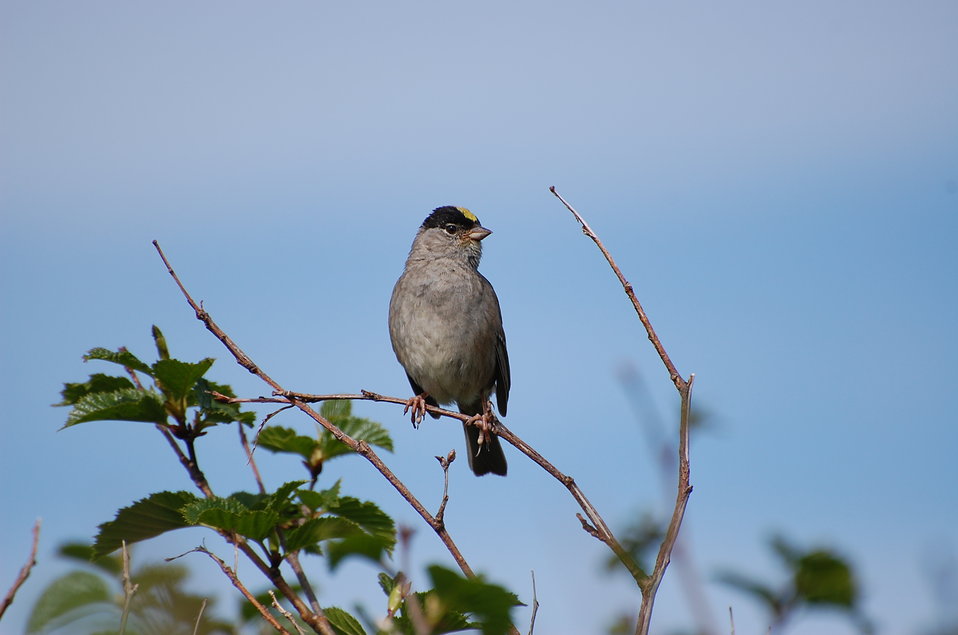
Golden-crowned Sparrow

Izembek National Wildlife Refuge